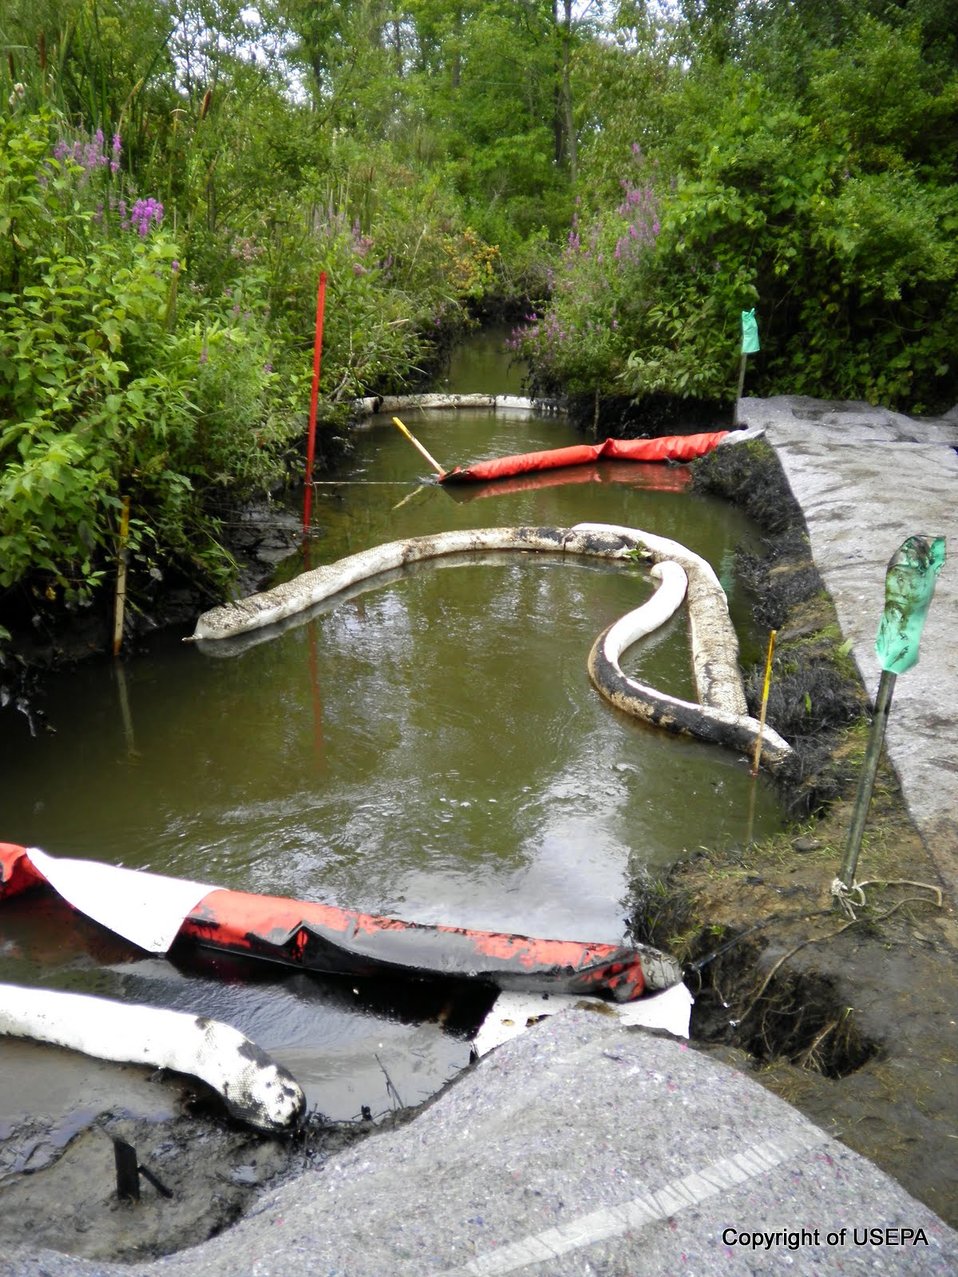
Talmadge Creek boom

August 2, 2010 - Containment strategy included using a combination of absorbent and containment booms to stop the flow of oil and remove it from Talmadge Creek